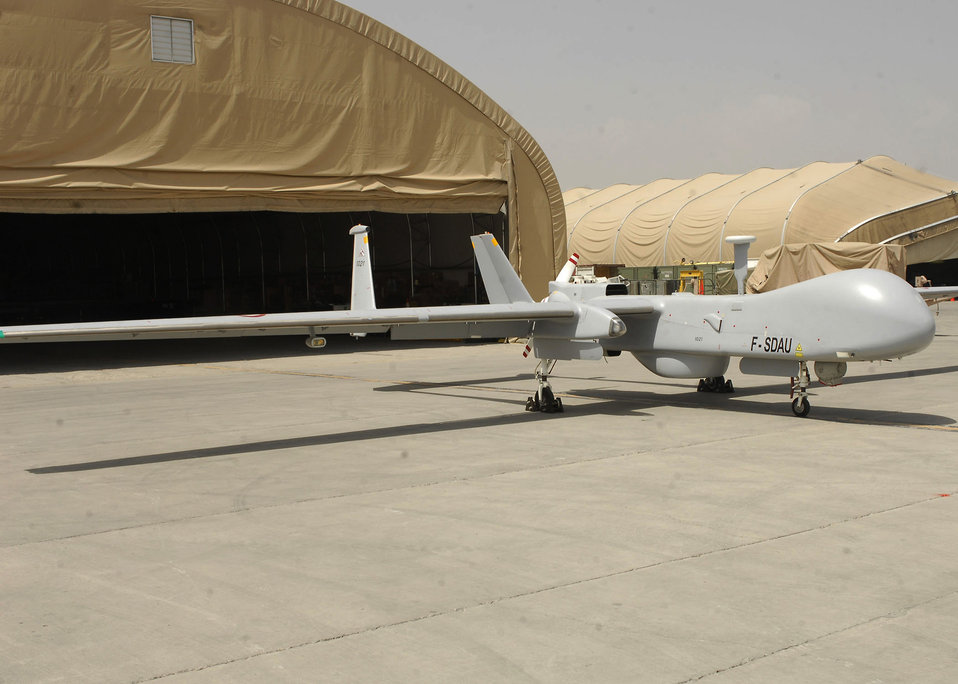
French unmanned aircraft protect Bagram Airmen

A French unmanned aircraft waits to be flown July 11 at Bagram Airfield, Afghanistan. The French unmanned aircraft is similar to the U.S. MQ-1 Predator MQ-1.